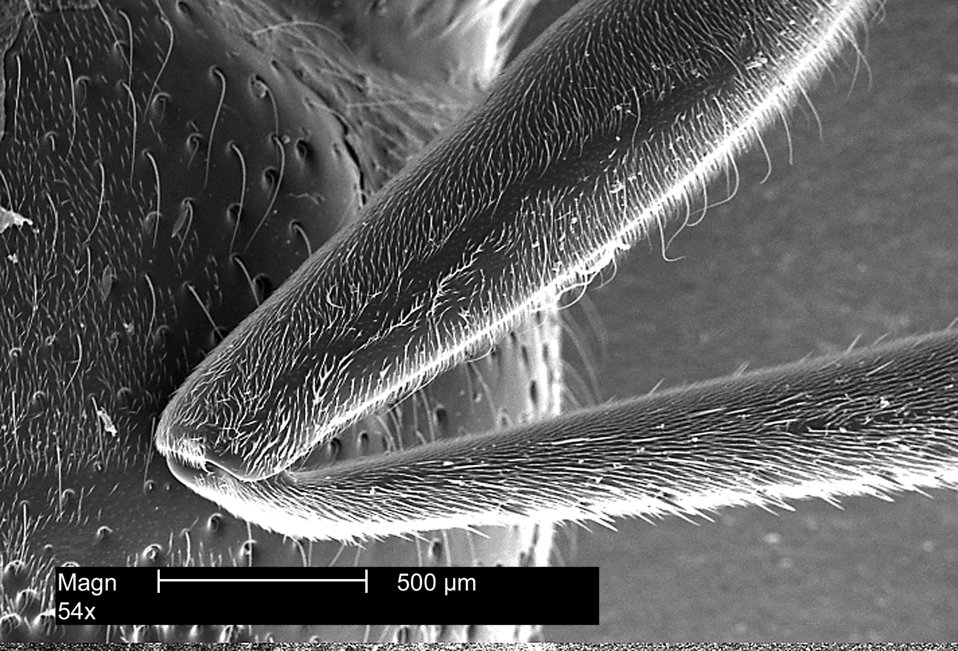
An electron micrograph of a wasp's leg appendage revealing small, highly sensitive hairs on its surface magnified 54x.